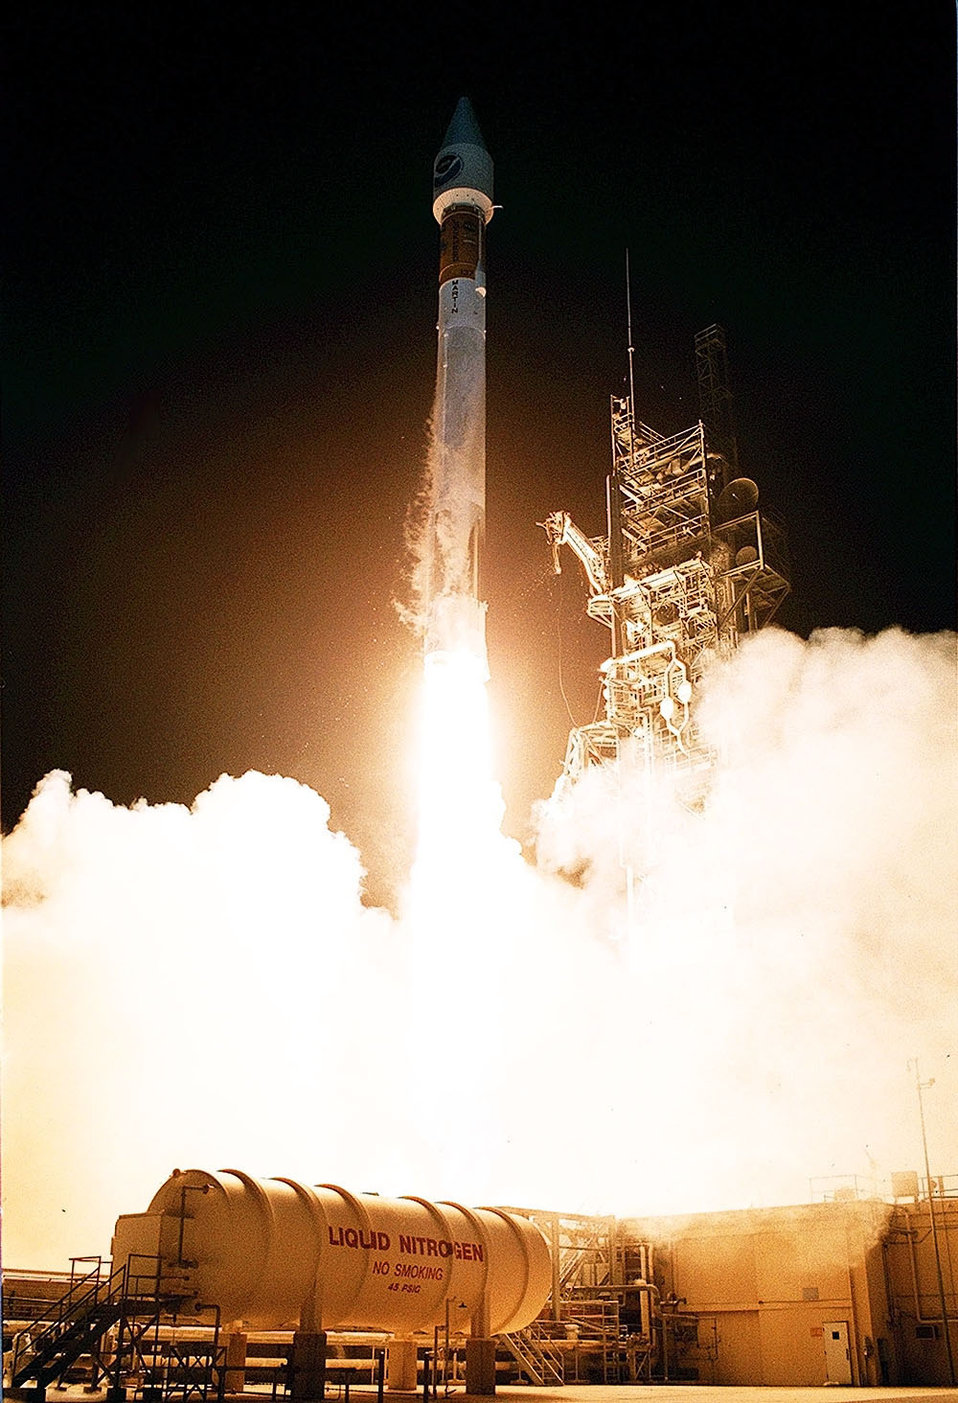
Atlas II

CAPE CANAVERAL AIR FORCE STATION, Fla. -- An Atlas II/Centaur rocket carrying the NASA/NOAA weather satellite GOES-L lifts off. The primary objective of the GOES-L is to provide a full capability satellite in an on-orbit storage condition, in order to assure NOAA continuity in services from a two-satellite constellation. Launch services are being provided by the 45th Space Wing at Patrick Air Force Base, Fla. Atlas II is a member of the Atlas family of launch vehicles which evolved from the successful Atlas intercontinental ballistic missile (ICBM) program. It is designed to launch payloads into low earth orbit, geosynchronous transfer orbit or geosynchronous orbit.